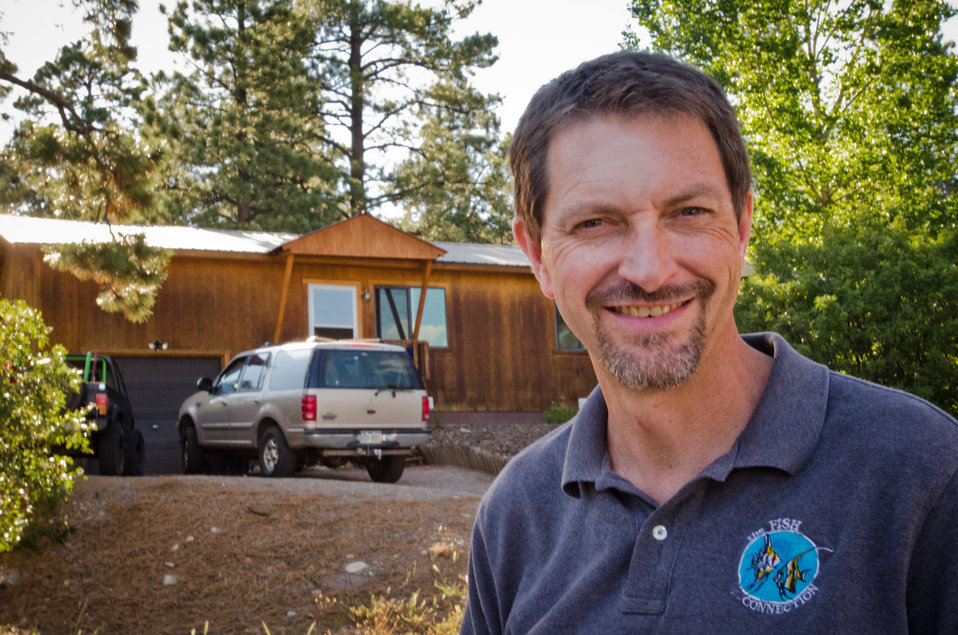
Colorado native and local business owner Bruce Longwell at his Durango, CO home on July 17, 2012. Mr. Longwell financed the single-family house with a U.S. Department of Agriculture (USDA) Rural Development (RD) Housing Assistance loan. This provided lower monthly payments than his prior rental home. Homeownership provides potential gains through home equity.